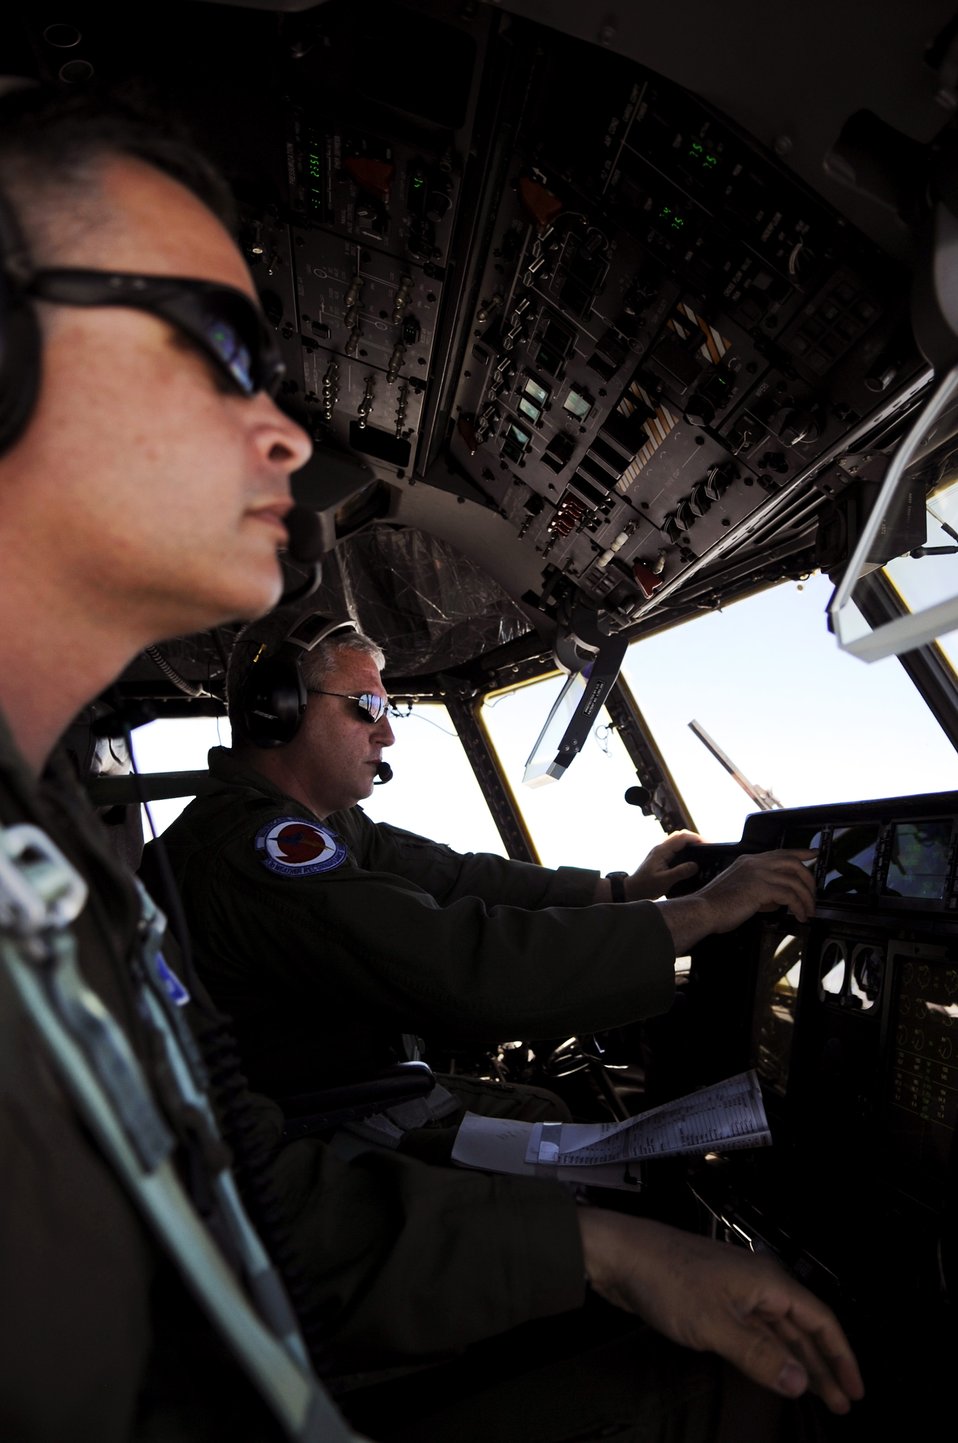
Bloggers Flight with the Hurricane Hunters

Capt. Shane Devlin and Maj. John Wagner fly a WC-130J